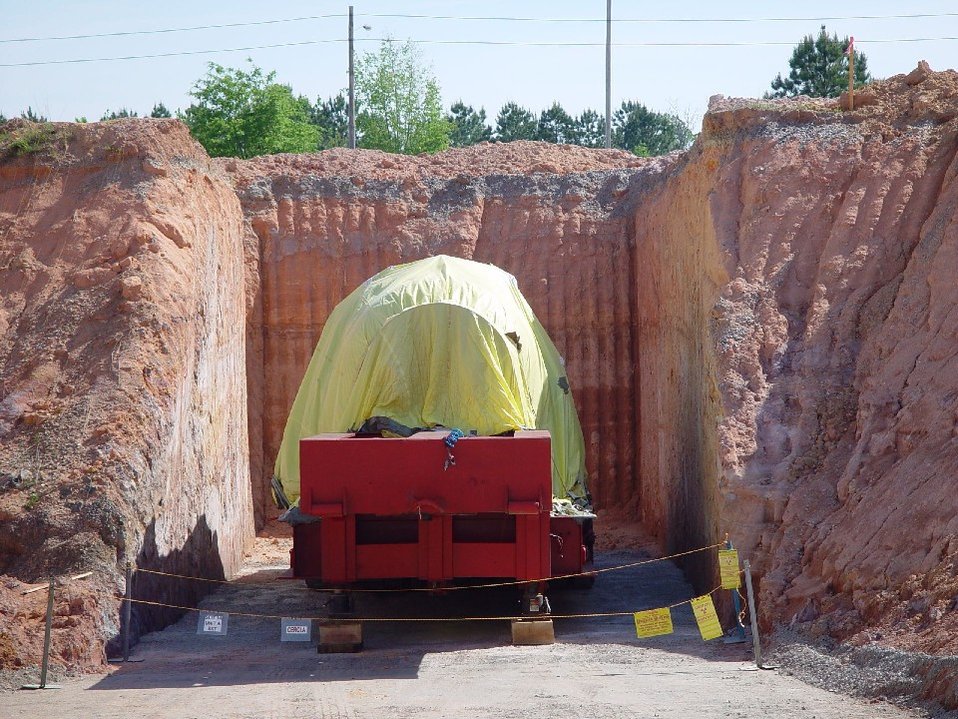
HWCTR Disposal, 4-14-11

Recovery Act workers removed the Heavy Water Components Test Reactor vessel, shown here, and permanently disposed it onsite.